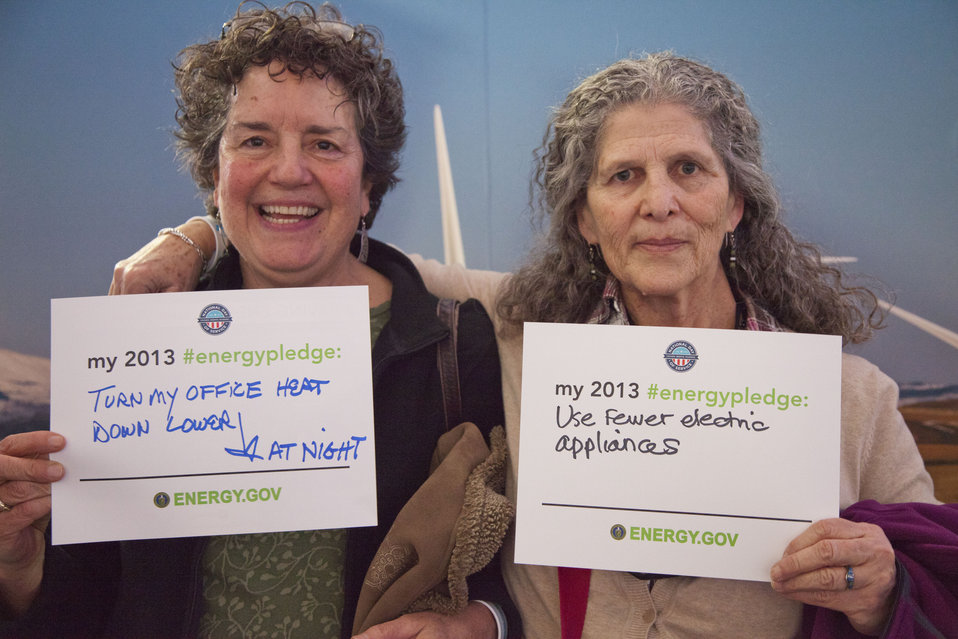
What's your #energypledge?